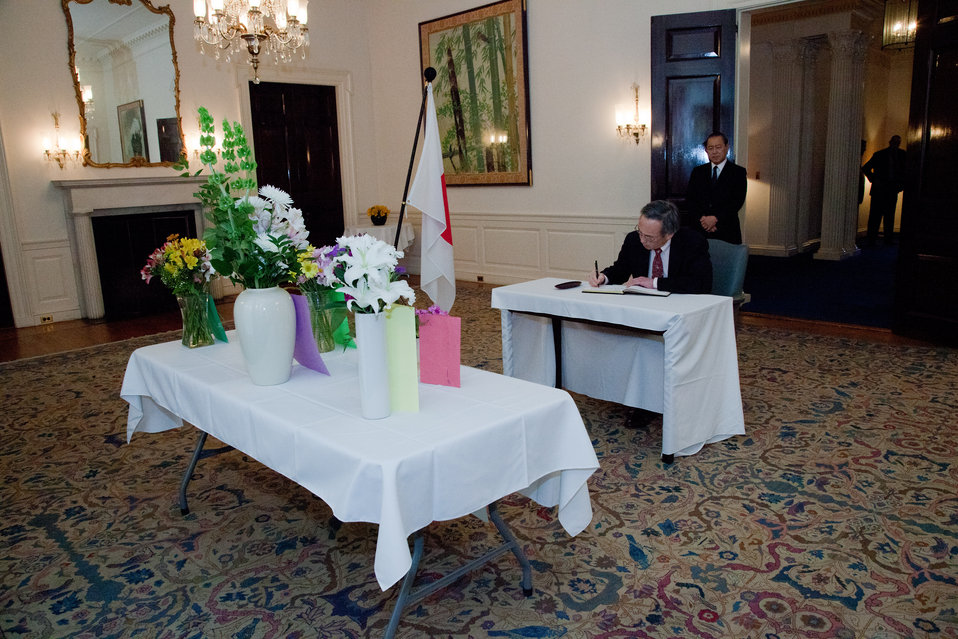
Sec. Chu visits Japanese Embassy 5 of 8

Sec. Steven Chu signs a book of condolences for the tragedy in Japan.